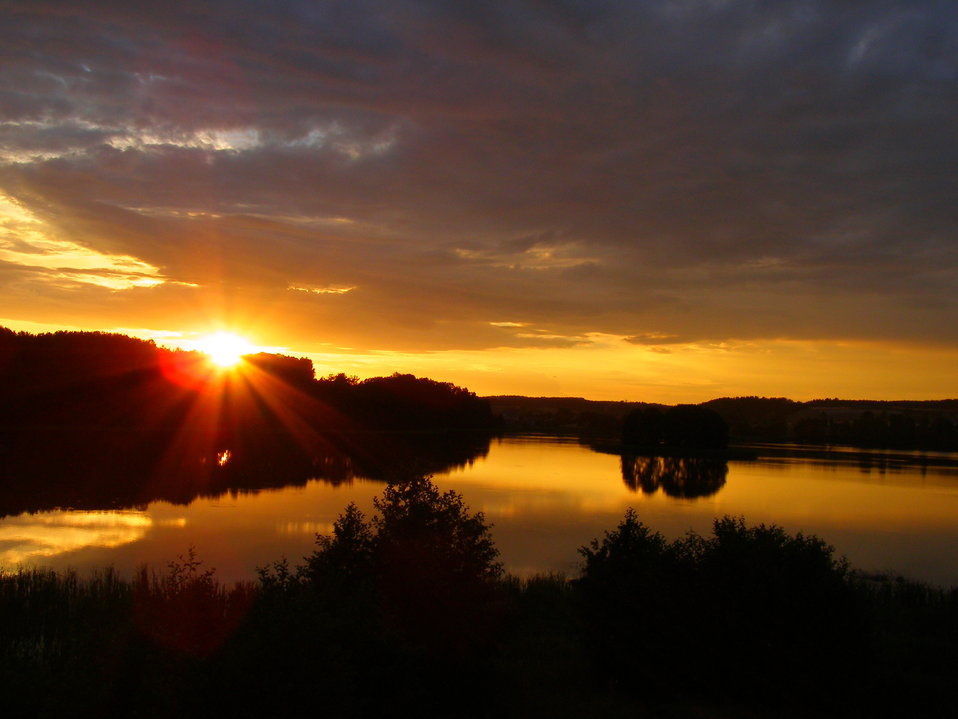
Polski: Zachód słońca nad jeziorem Raduń.